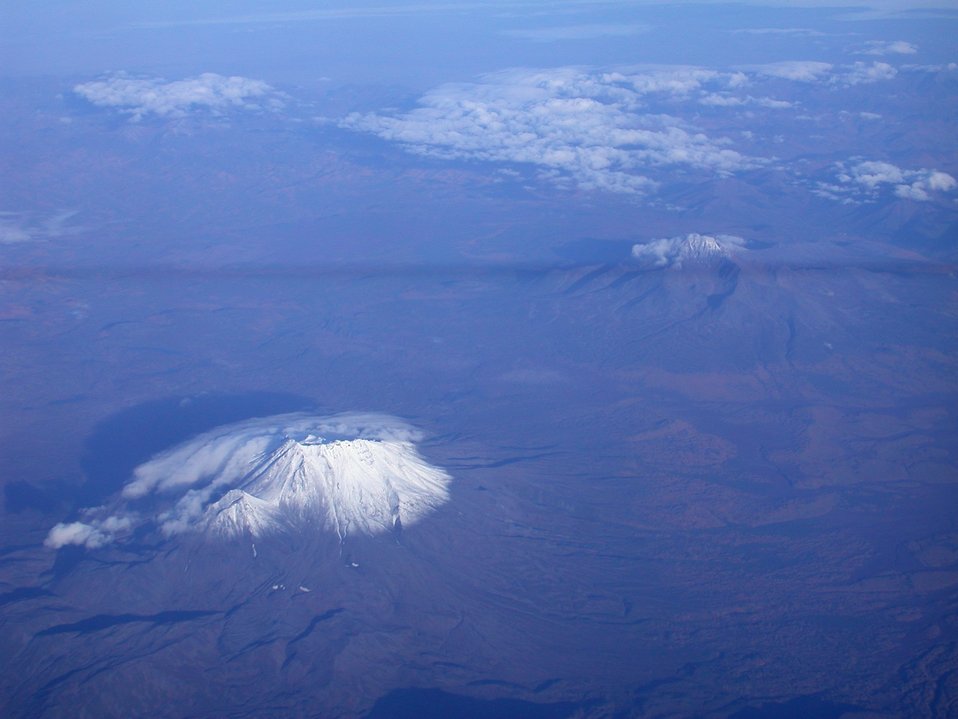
Volcanoes on the Kamchatka Peninsula.